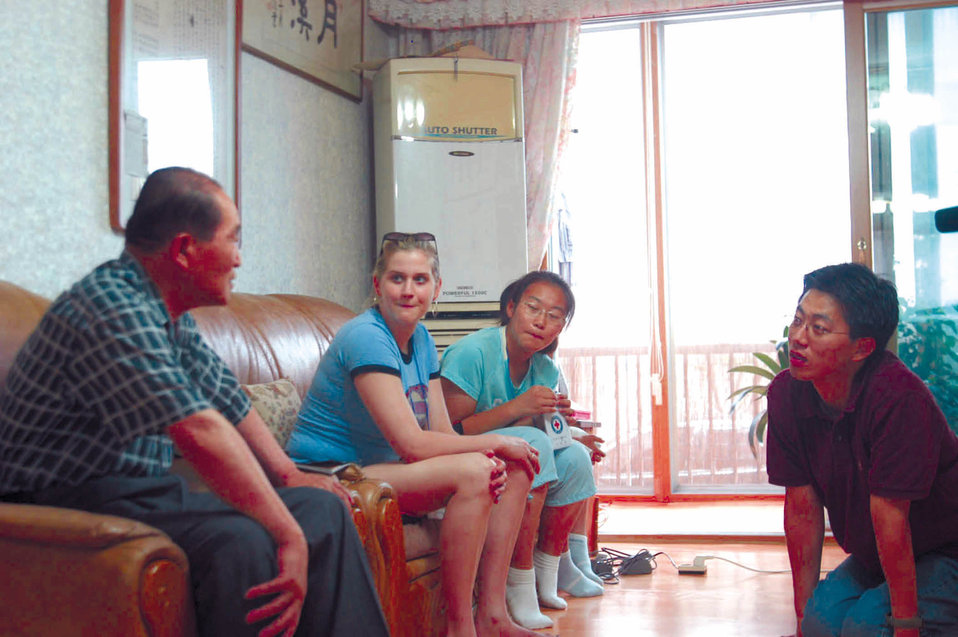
Airmen share culture with South Koreans

JEONJU CITY, South Korea -- Senior Airman Jennifer Babb visits with the Ko family as part of the Korean Red Cross Cultural Awareness Program. She spent an evening with the family learning about traditional Korean customs. Airman Babb is assigned to the 8th Aircraft Maintenance Squadron at nearby Kunsan Air Base.